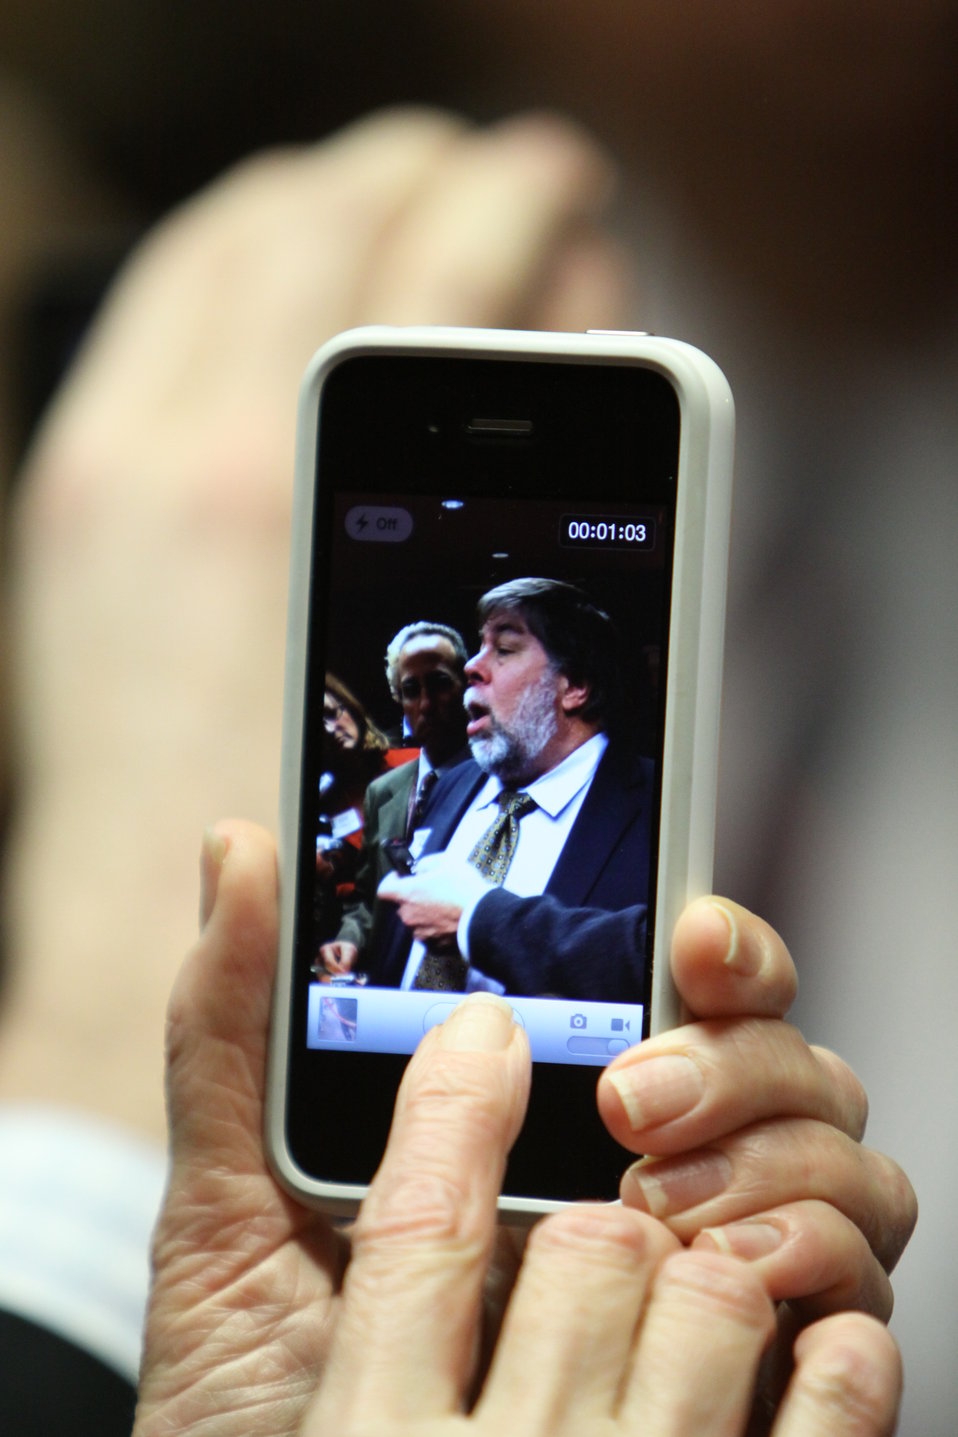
Reporter Captures Apple Co-Founder Steve Wozniak's Statements Following the Meeting